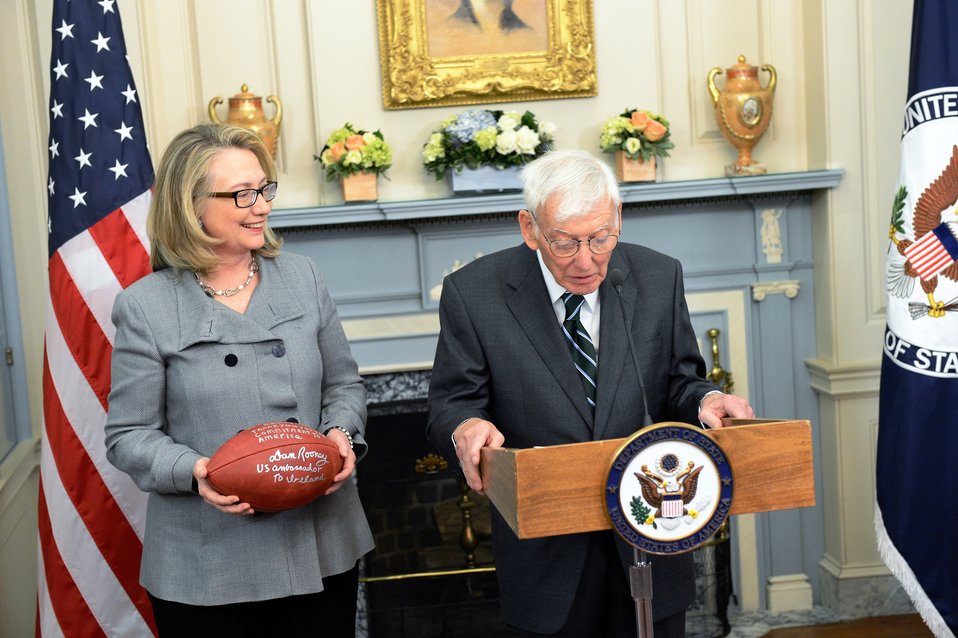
Secretary Clinton Participates in a Flag Ceremony for Ambassador Rooney

U.S. Secretary of State Hillary Rodham Clinton participates in a Flag Ceremony for U.S. Ambassador to Ireland Dan Rooney at the U.S. Department of State in Washington, D.C., January 9, 2013.